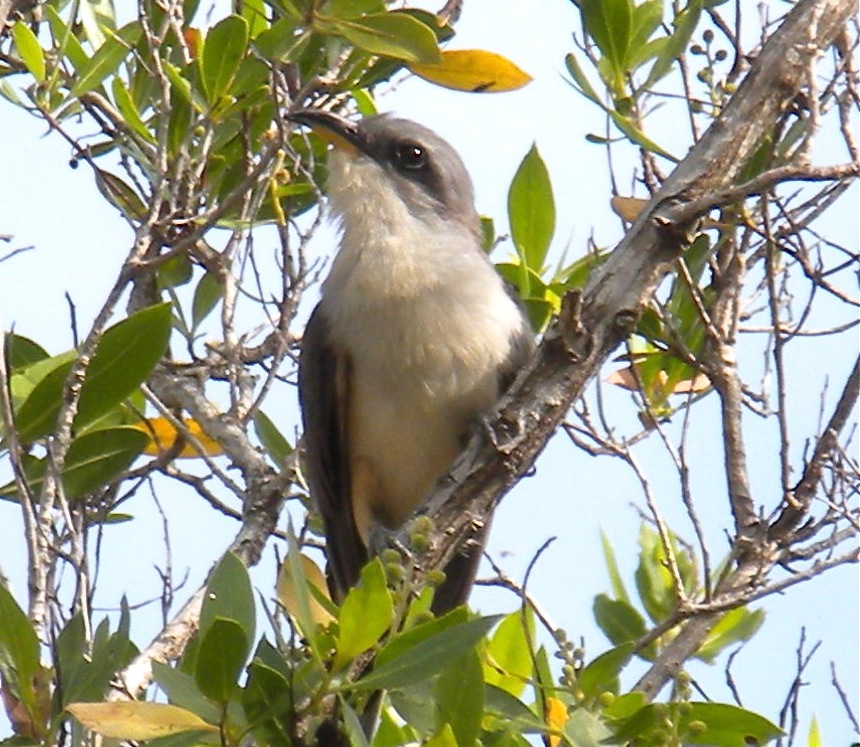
1st mangrove cuckoo sighted ...

...on March 2, 2012 at J.N. Ding Darling National Wildlife Refuge in FL.
This photo was taken in 2011 at Biscayne National Park